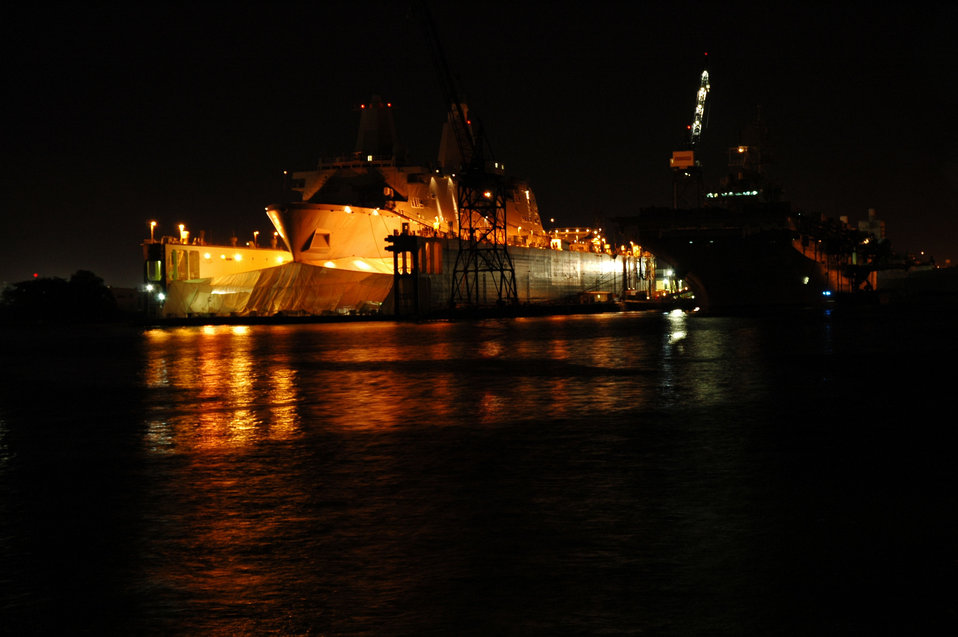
A Norfolk area shipyard seen at night.